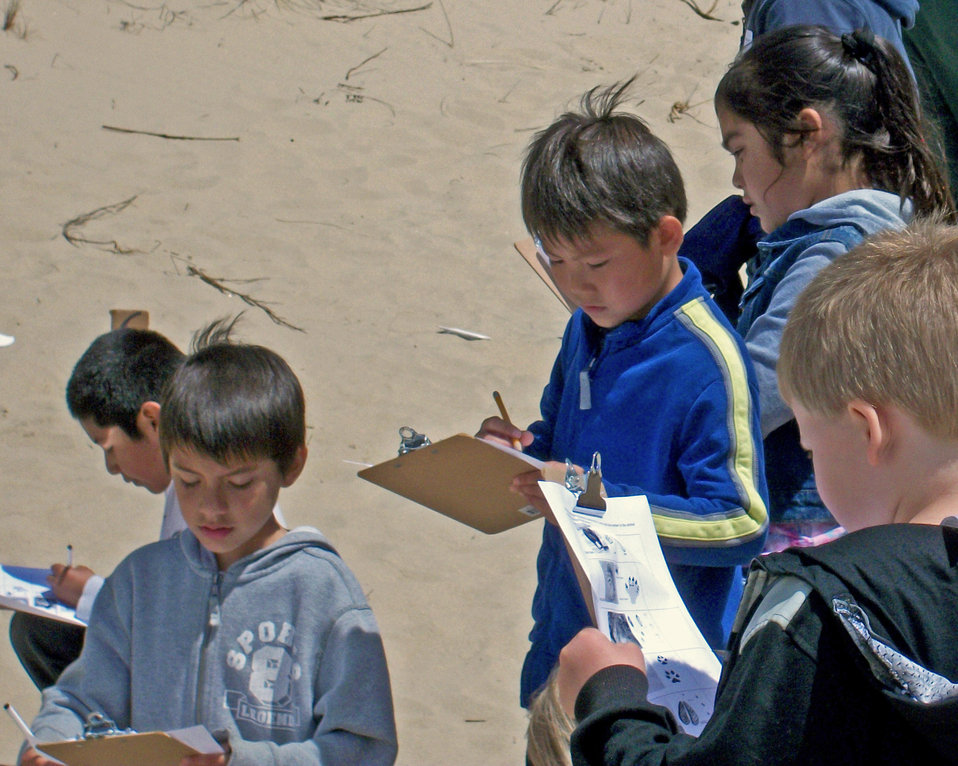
Ore Dunes NRA students Tracks

Siuslaw Elementary School students from Florence, OR, record information about animal tracks found within the Oregon Dunes National Recreation Area during a field trip hosted by U.S. Forest Service Siuslaw National Forest field rangers as part of the Valuing People and Places program.